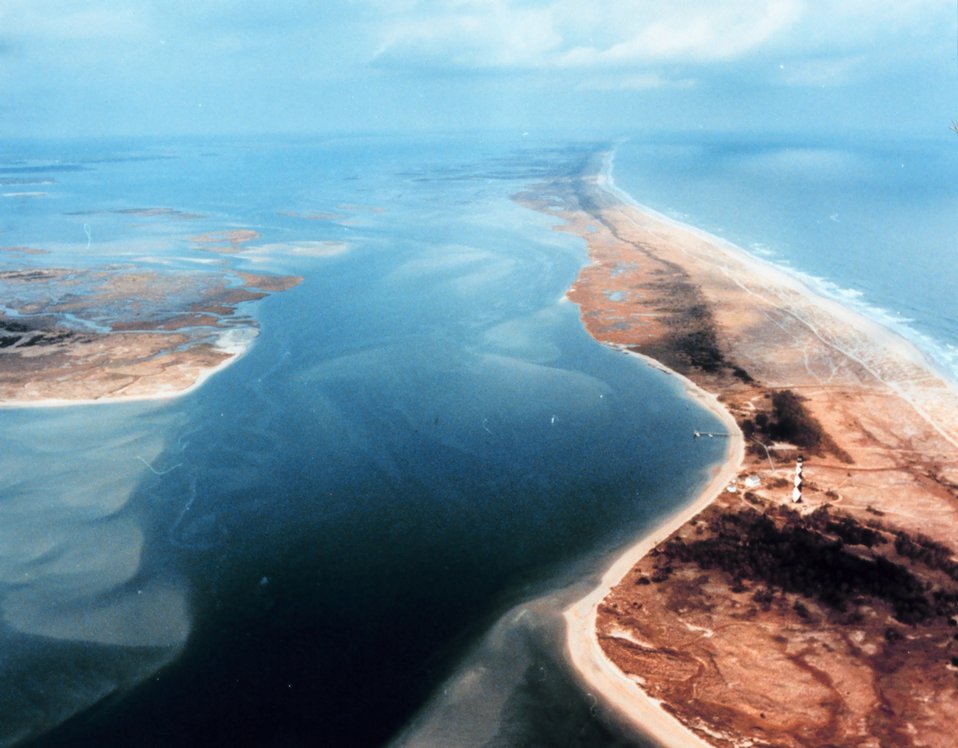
3449 North Latitude 7622 West Longitude.